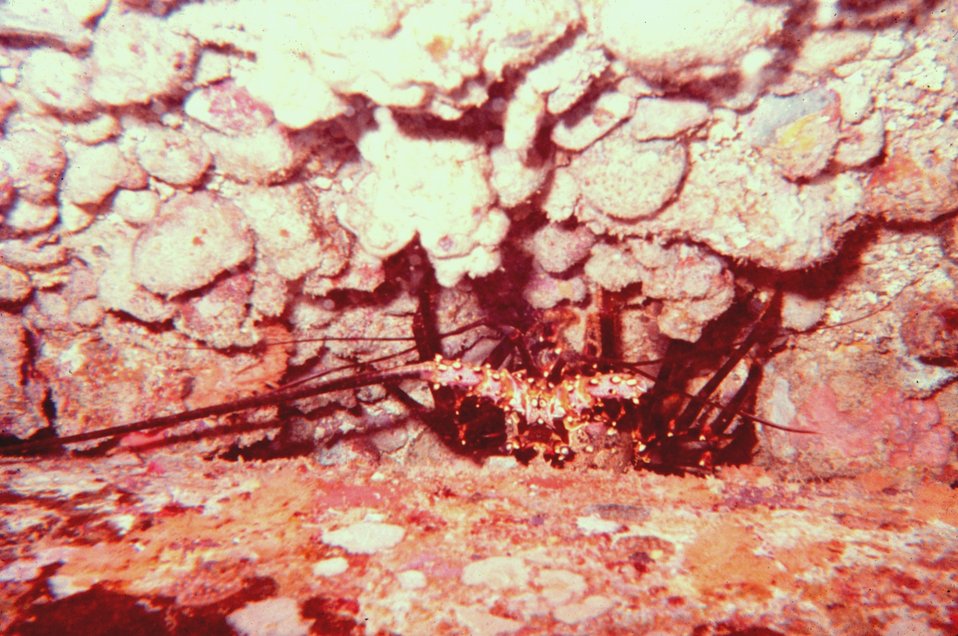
Looking straight down at a spiny lobster - Panulirus sp.